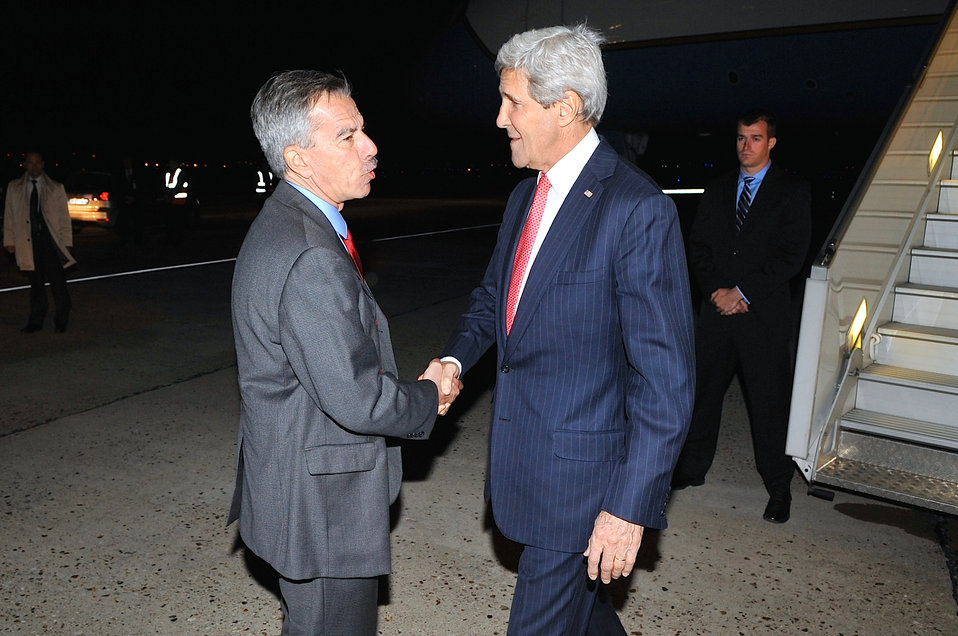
Chargé Taplin Greets Secretary Kerry Upon Arrival in Paris for D-Day Commemoration

Embassy Paris Chargé d'Affaires Mark Taplin greets U.S. Secretary of State John Kerry as he arrives at Le Bourget Airport in Paris on June 4, 2014, in advance of the 70th anniversary D-Day commemoration in France.